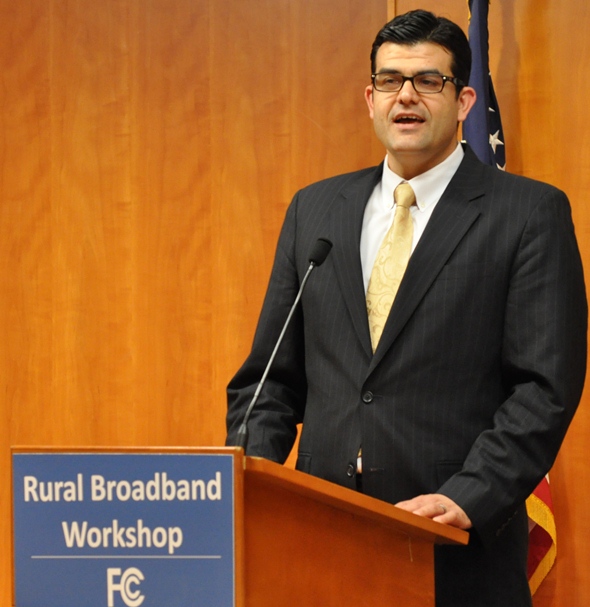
Rural Broadband Workshop: March 19, 2014

Opening Remarks from John Padalino, Administrator, Rural Utilities Service, USDA